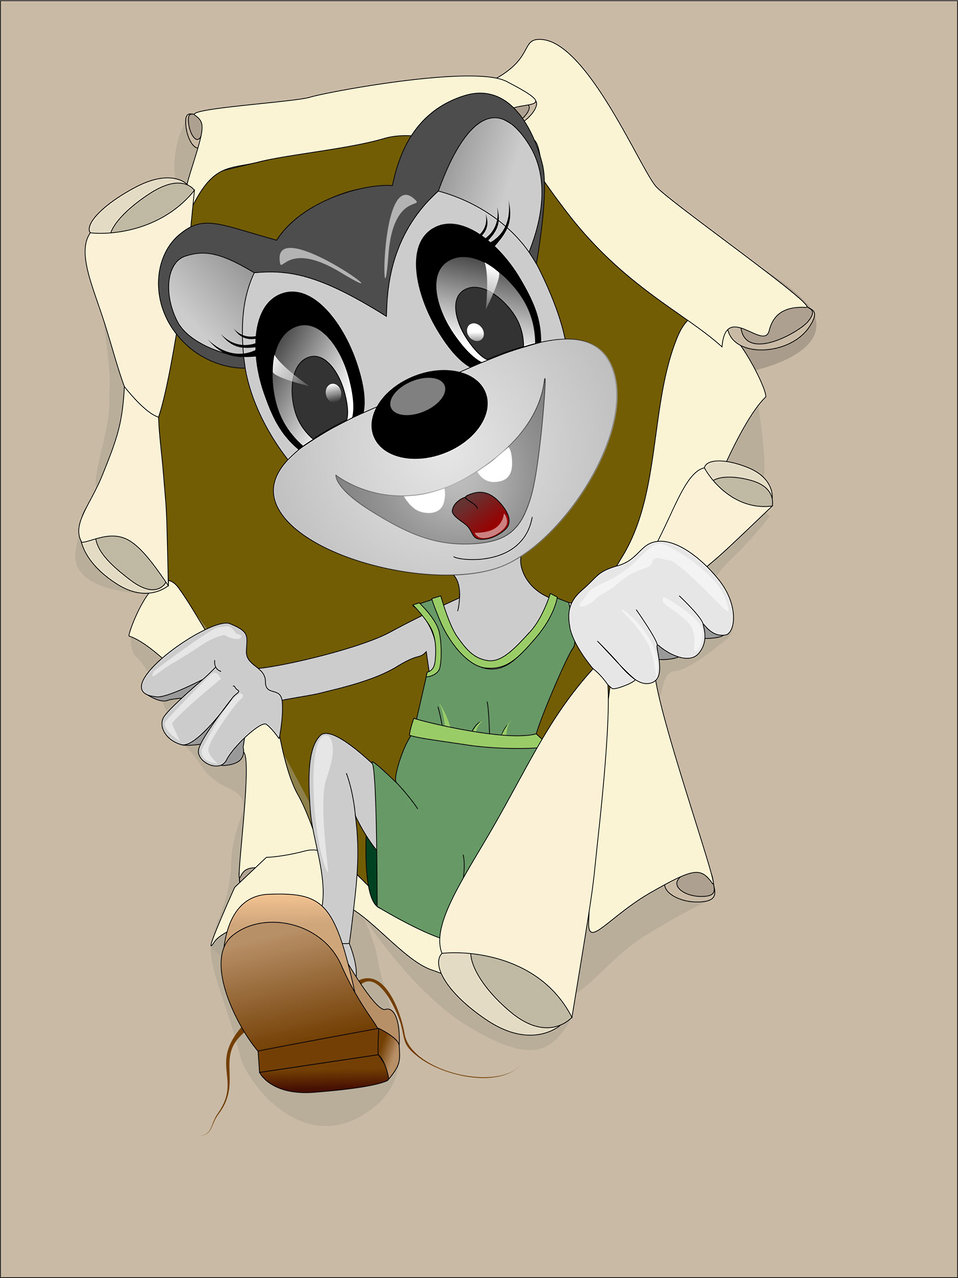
Jolly mouse

Funny little mouse design tearing paper.